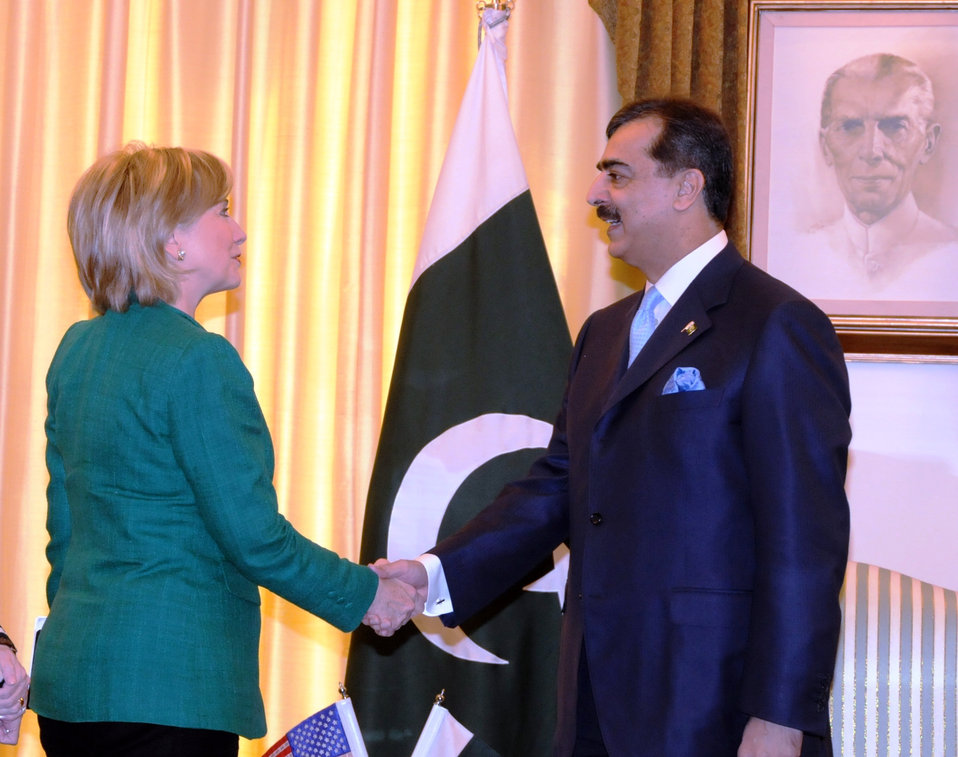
Secretary Clinton Meets With Pakistani Prime Minister

U.S. Secretary of State Hillary Rodham Clinton is welcomed by Pakistani Prime Minister Yousuf Raza Gilani at the Prime Minister's residence in Islamabad, Pakistan October 28, 2009.